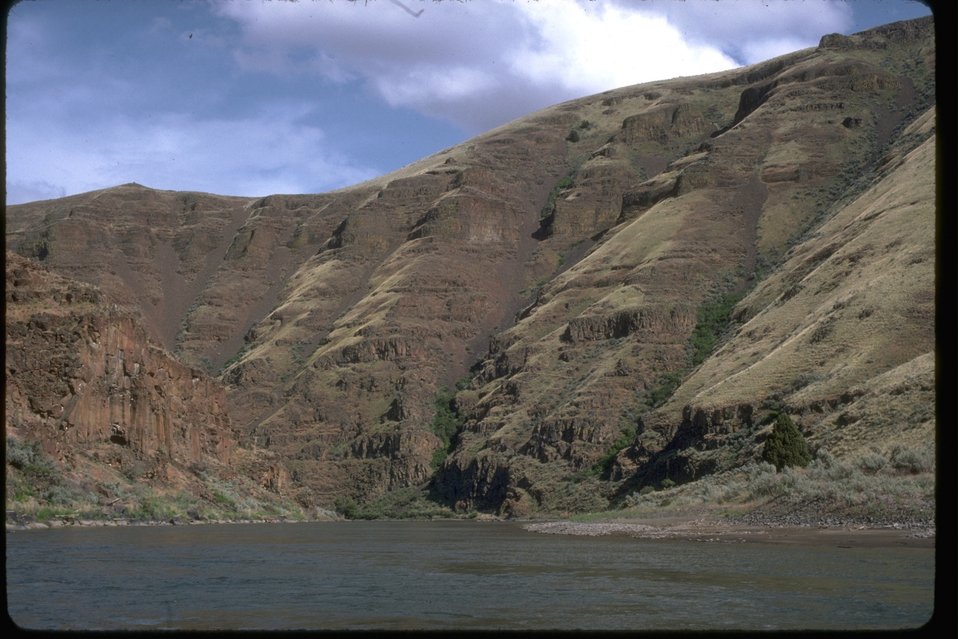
The Lower John Day River. OR 5-6/5-1